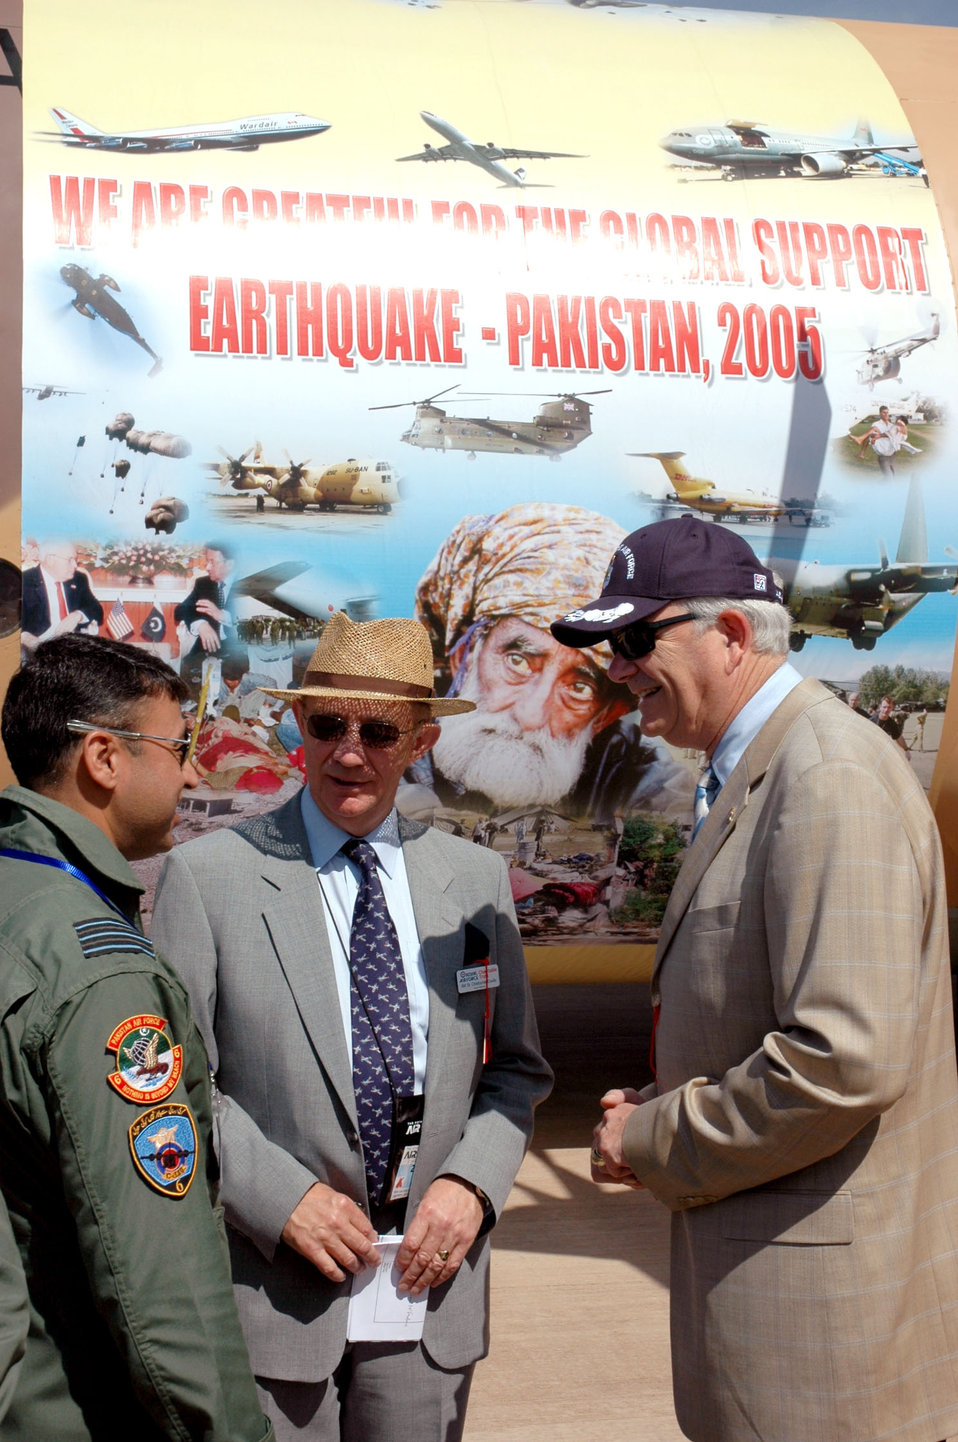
Pakistani Airmen personalize global thanks for support

Secretary of the Air Force Michael W. Wynne (right) and Sir Christopher Coville (center) talk with Wing Cmdr. Haseeb Gul from the Pakistan Air Force during the Royal International Air Tattoo in England. Commander Gul said the Pakistani airmen attended the air show as a way of saying